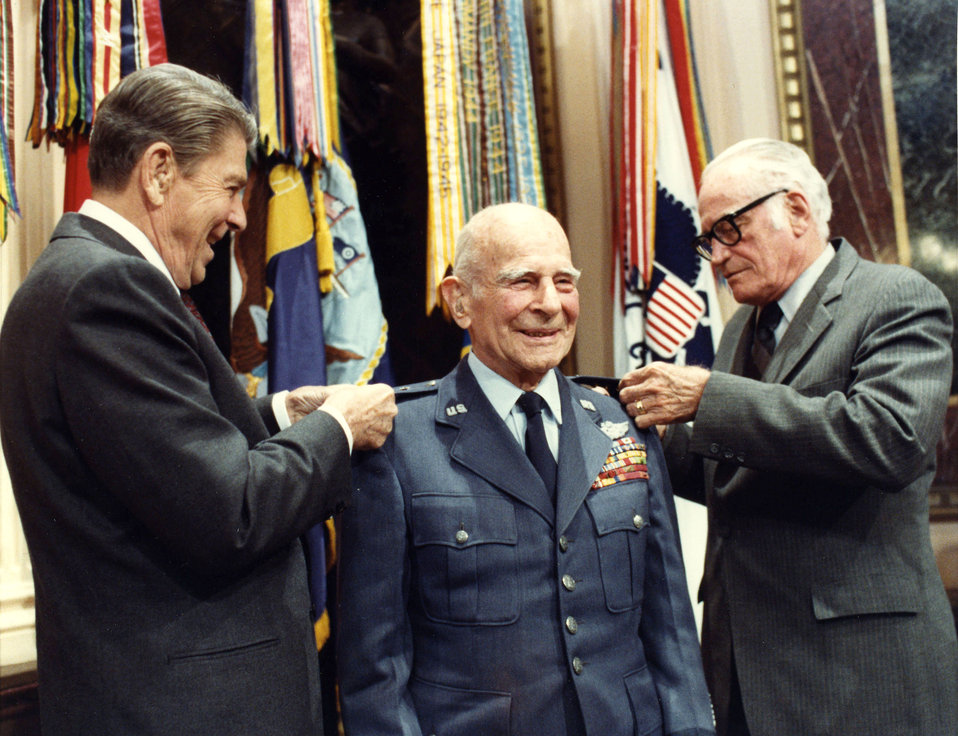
Gen. Doolittle

President Ronald Reagan and Senator Barry L. Goldwater pin the fourth star on Gen. James Doolittle April 10, 1985, 26 years after his retirement from the U.S. Air Force. General Doolittle was advanced to four-star rank by Senate confirmation, making him the first person in Air Force Reserve history to wear four stars.